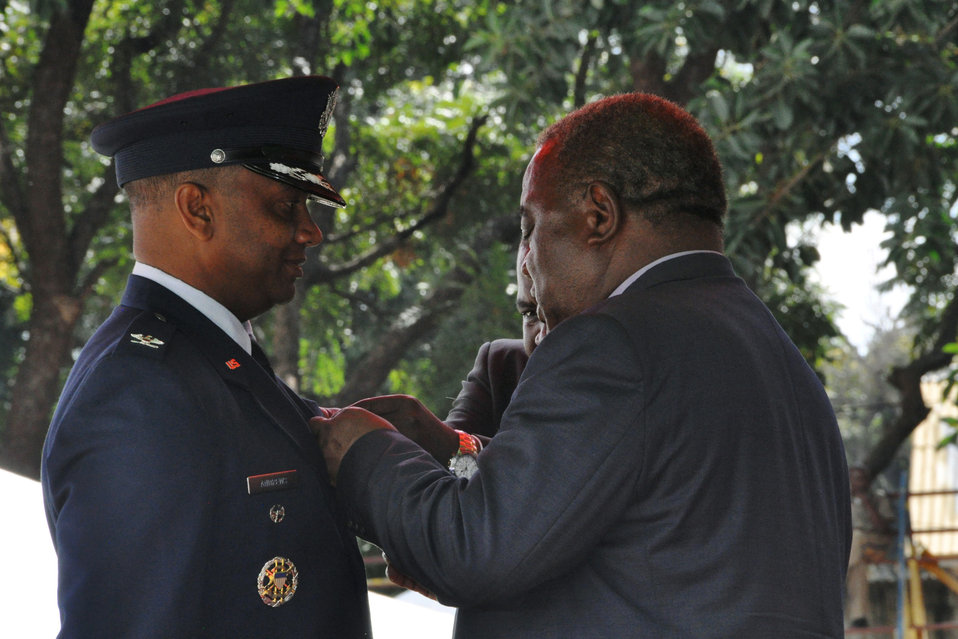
Colonel receives honor

Zambian President Rupiah Banda awards Col. Keith Andrews the Medal of Gallantry May 25, 2010, at Lusaka, Zambia, for the rescue of two Zambian women in the Zambezi River at Victoria Falls a year earlier. Colonel Andrews was visiting the area as part of an Air Force Air War College regional study program tour.